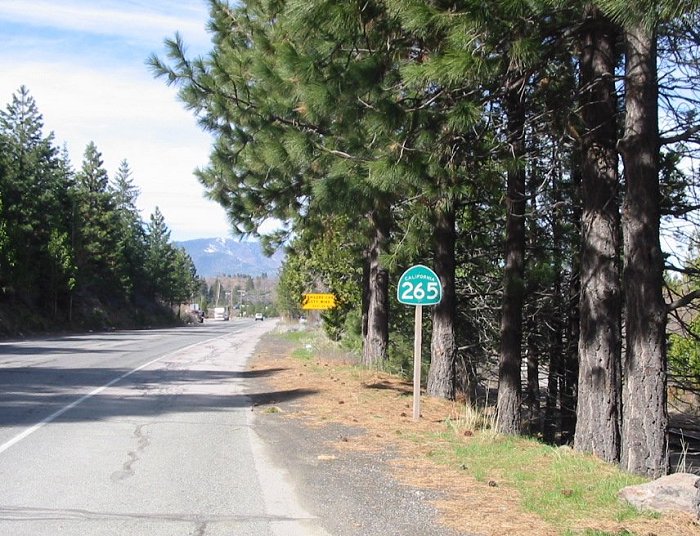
California State Route 265, SR 265 shield, Weed, California. CA 265 trailblazer.